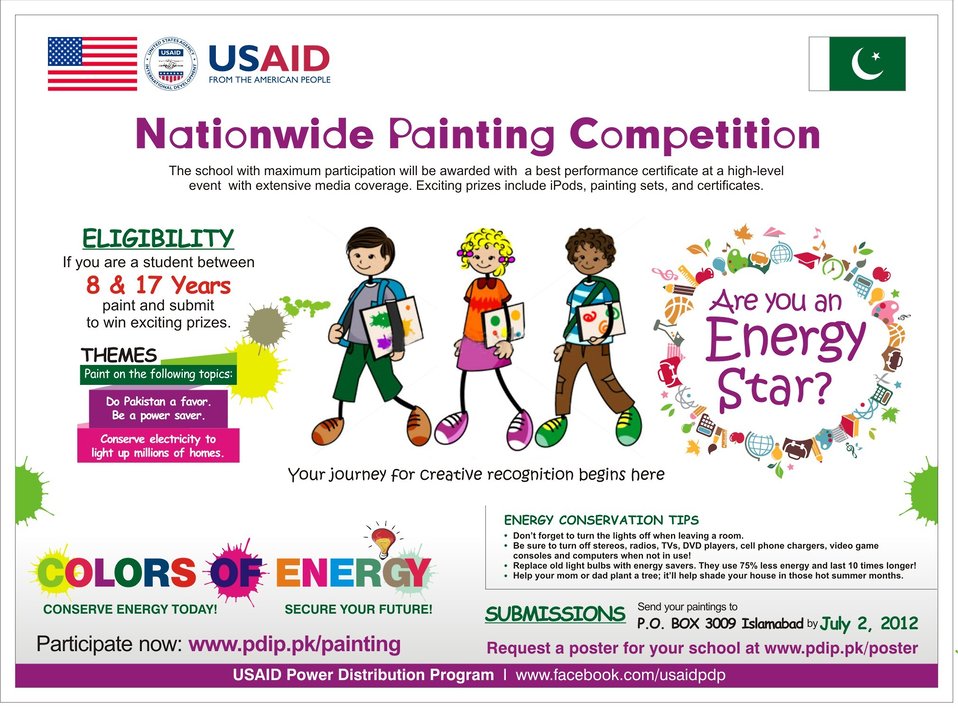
Urdu ad - Colors of Energy

Islamabad, June 8, 2012: Homes and schools are among the largest consumers of electricity in Pakistan, and if children are engaged and involved in nationwide energy conservation, it would result in the reduction of load shedding and uninterrupted electricity to consumers. Energy consumption in everyday life results in environmental degradation and load shedding since energy is produced from fuel, which is culled from coal, oil and natural gas. These non-renewable sources of energy millions of years in the making will eventually dry up if not conserved.